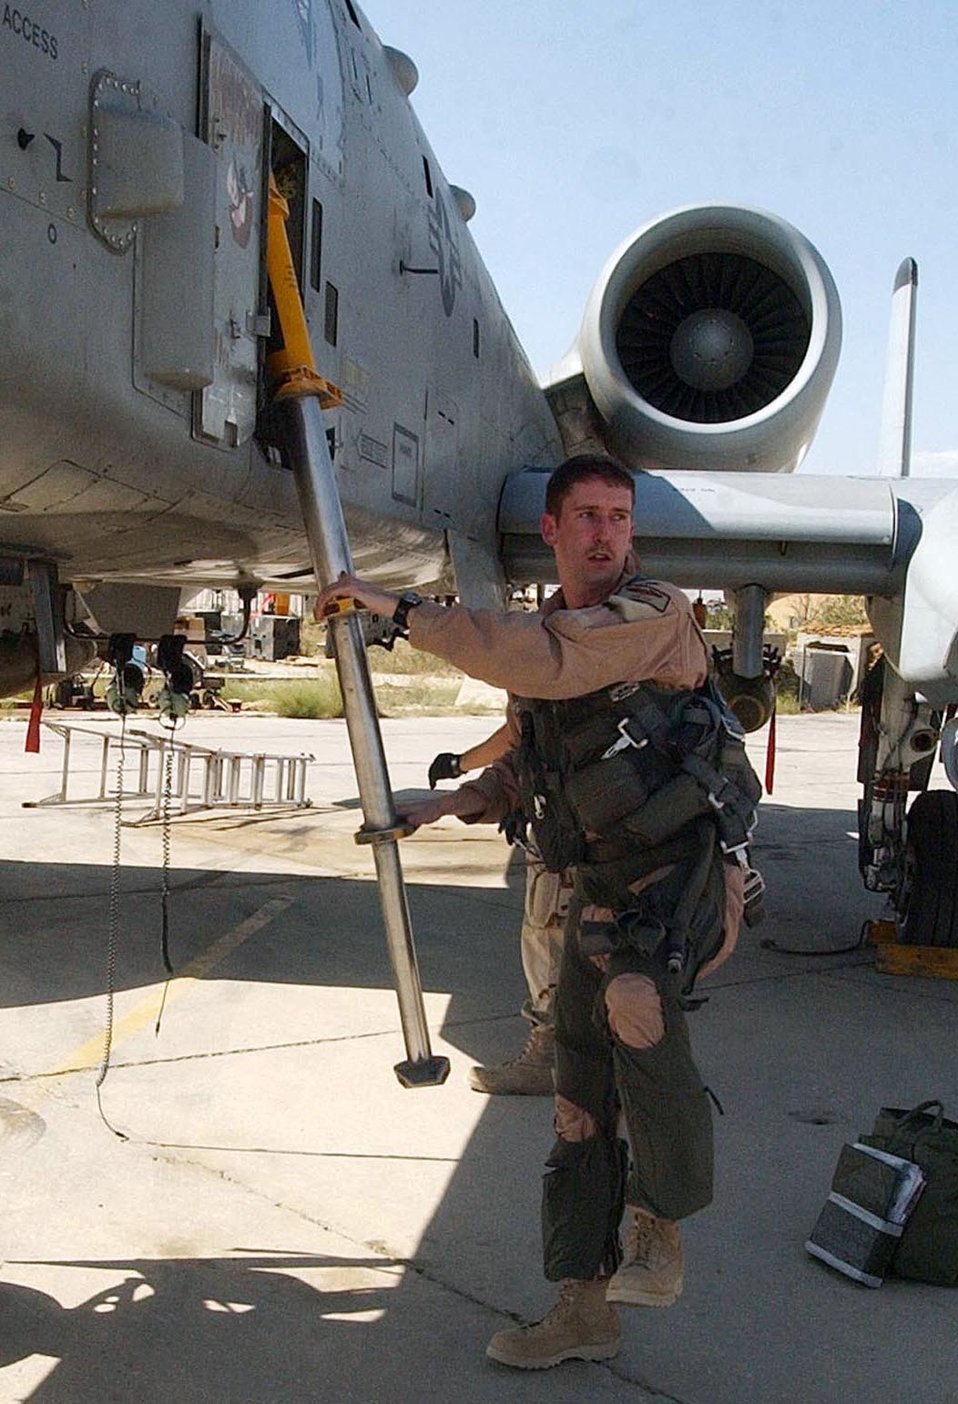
Mission complete - Axt

BAGRAM AIR BASE, Afghanistan -- First Lt. Erik Axt, 81st Expeditionary Fighter Squadron, emerges from his A-10 Thunderbolt II after flying a mission here Aug. 14 supporting Operation Enduring Freedom.